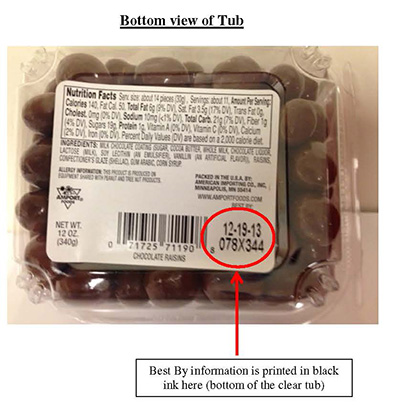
RECALLED – Amport Milk Chocolate Raisins, 12 oz clear tub

August 27, 2013 – Product Recall – Amport Foods Issues Allergy Alert on Undeclared Peanuts Mislabeled as Milk Chocolate Raisins.